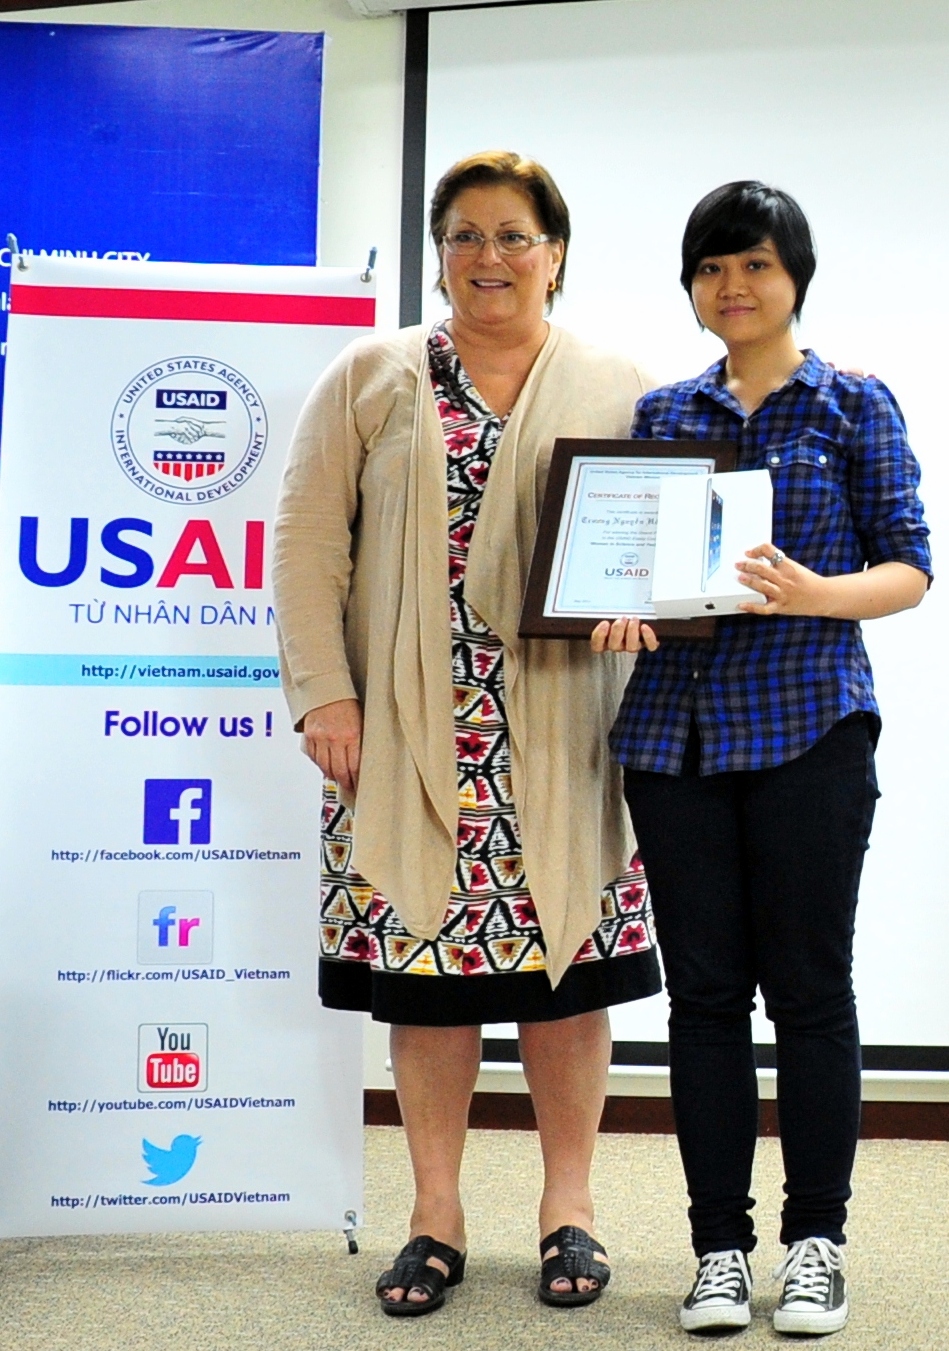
Women in Science and Technology Essay Contest Award Ceremony

U.S. Embassy Deputy Chief of Mission Claire Pierangelo presents Ms. Truong Nguyen Hong Tam, a student from Institute of Asian Studies in Ho Chi Minh City, with the top prize in USAID's essay competition. She received an Apple iPad Mini and a USAID certificate of appreciation.